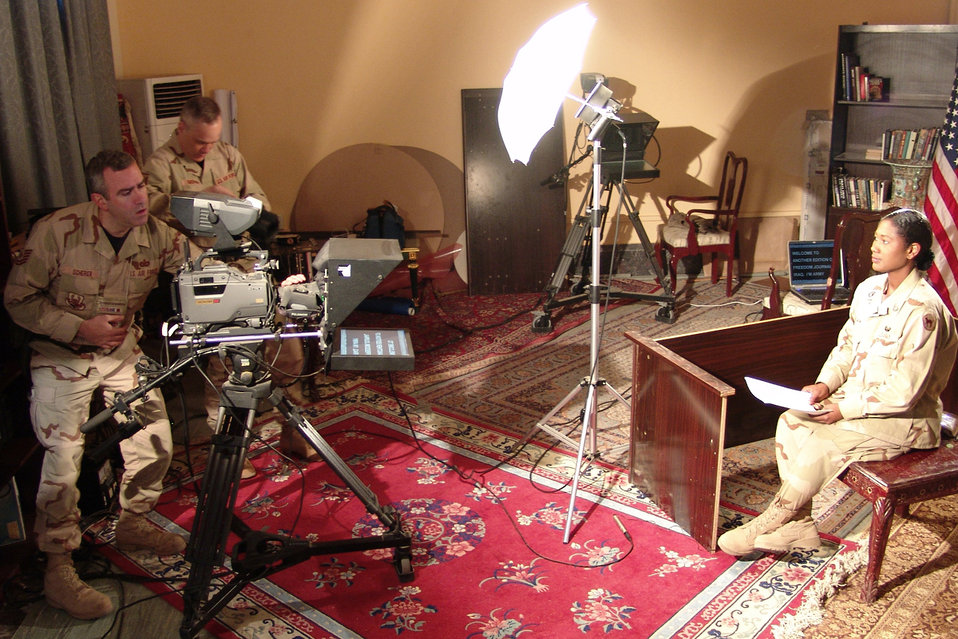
From Baghdad, it's AFN

BAGHDAD, Iraq -- Army Sgt. 1st Class Melissa Rolan, American Forces Network-Iraq anchor, waits for her cue while co-workers, Tech. Sgt. Bill Scherer (left) and Master Sgt. Richard Simonsen Jr., adjust their cameras before recording a segment for the Freedom Journal Iraq program. The program airs three times a week on the Pentagon Channel. The AFN detachment broadcasts radio and TV stories to troops throughout Iraq.